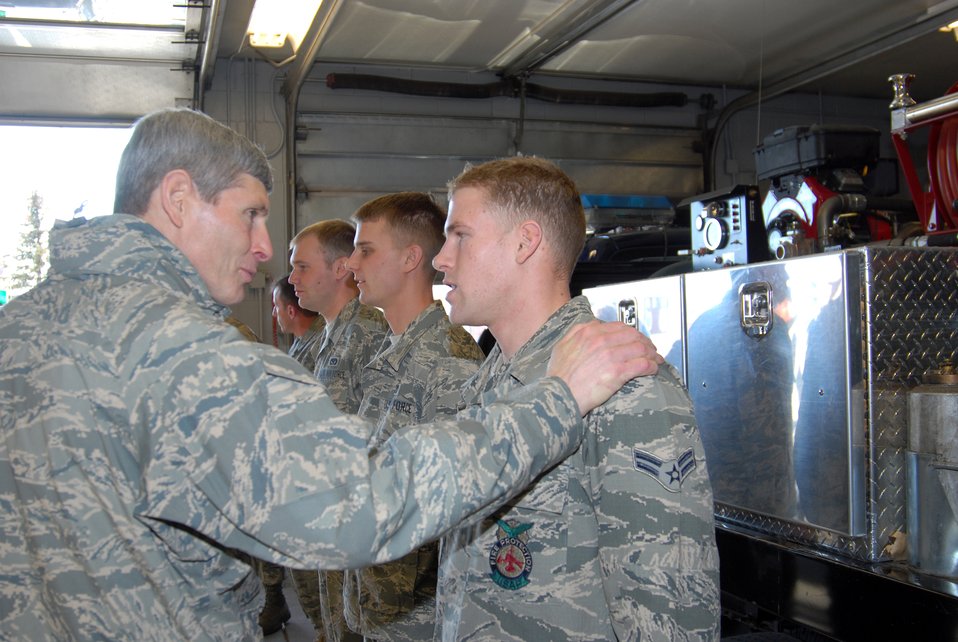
CSAF visit

Air Force Chief of Staff Gen. Norton Schwartz thanks Airman 1st Class Kory Lindbom, a firefighter at F.E. Warren Air Force Base, Wyo., Dec. 24, 2009, for being an important part of the Air Force team and the 90th Missile Wing mission. The general and Mrs. Schwartz visited the base during Christmas to thank Airmen in 24-hour work centers and to reinforce the Air Force's commitment to the nuclear enterprise.